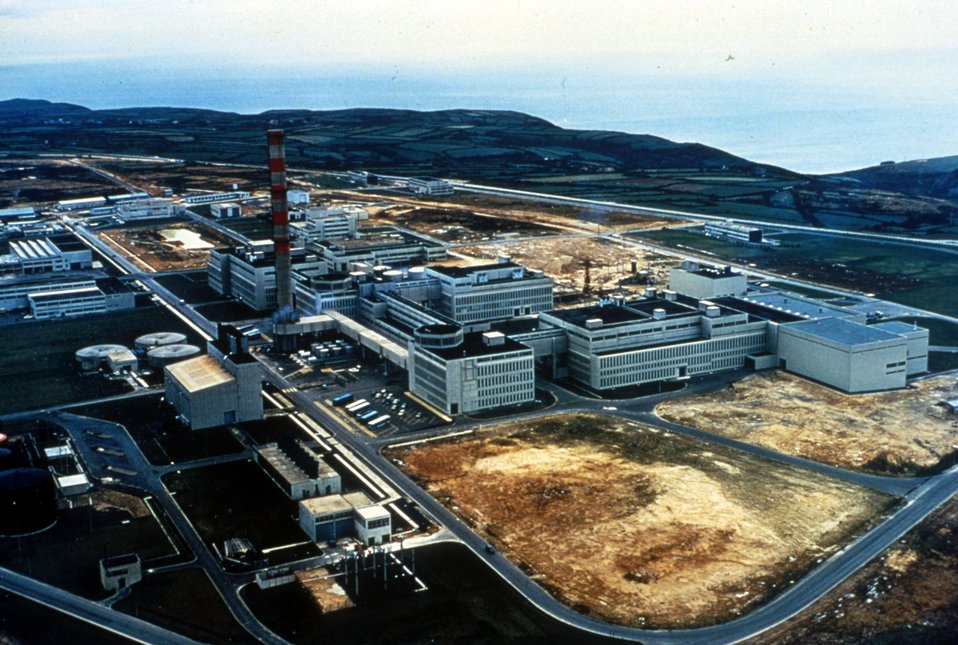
France -- Reprocessing, Le Hague.